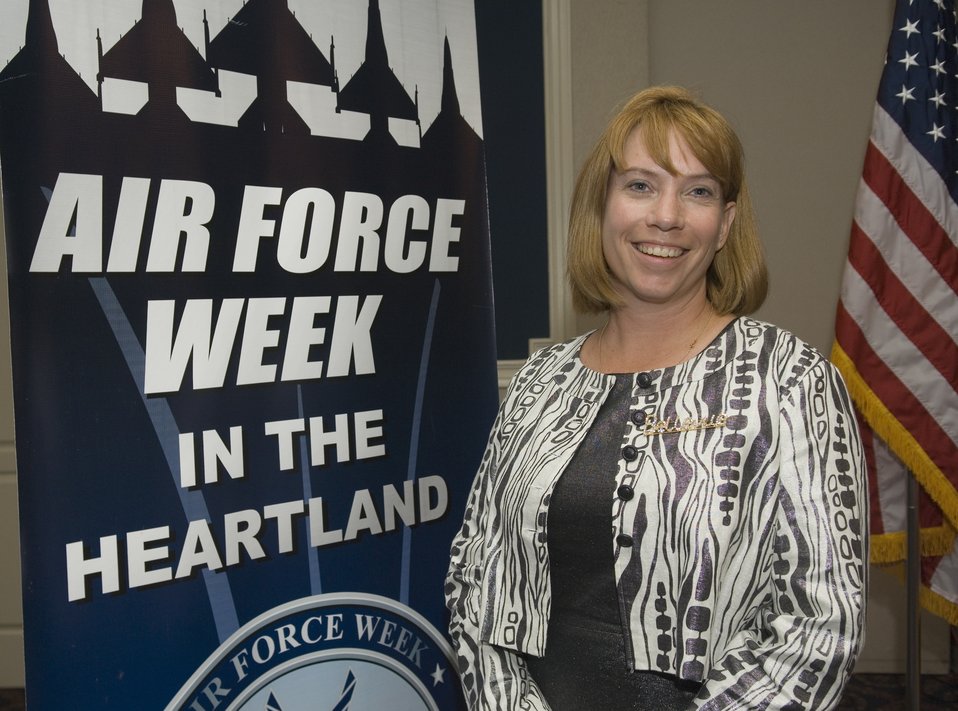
Female leaders from Omaha, Air Force gather at Offutt

Megan Lucas prepares for the Ten Dinner Aug. 14 in the Patriot's Club at Offutt Air Force Base, Neb. Ms. Lucas is the president and chief executive officer of the Bellevue Chamber of Commerce.